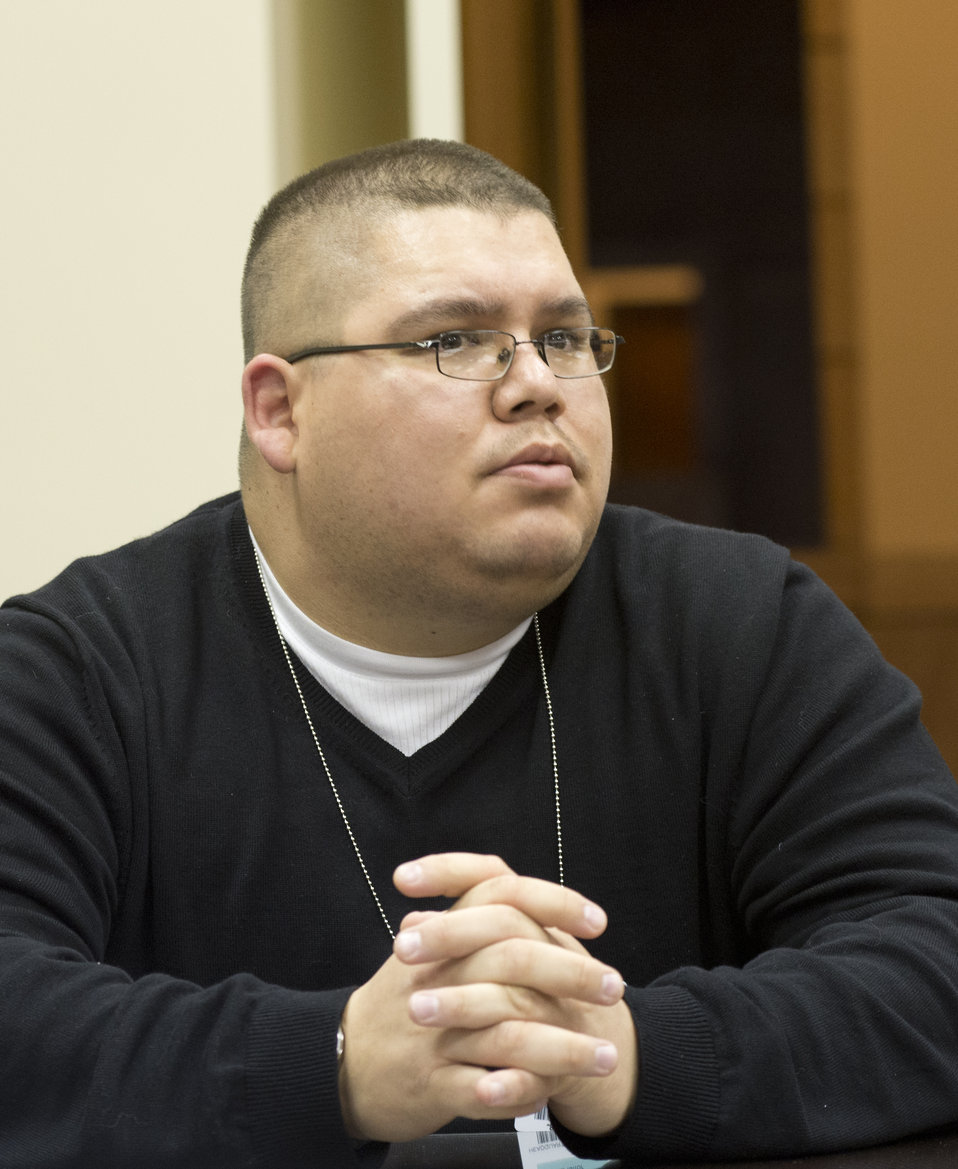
Stillaguamish Tribe, WA Council member Nick Smith listens to Agriculture Deputy Secretary Krysta Harden speak at a roundtable discussion to discuss Agriculture, Community and Economic Development Opportunities in Indian Country with tribal leaders at the U.S. Department of Agriculture (USDA) in Washington, D.C. on Tuesday, Nov. 12, 2013.